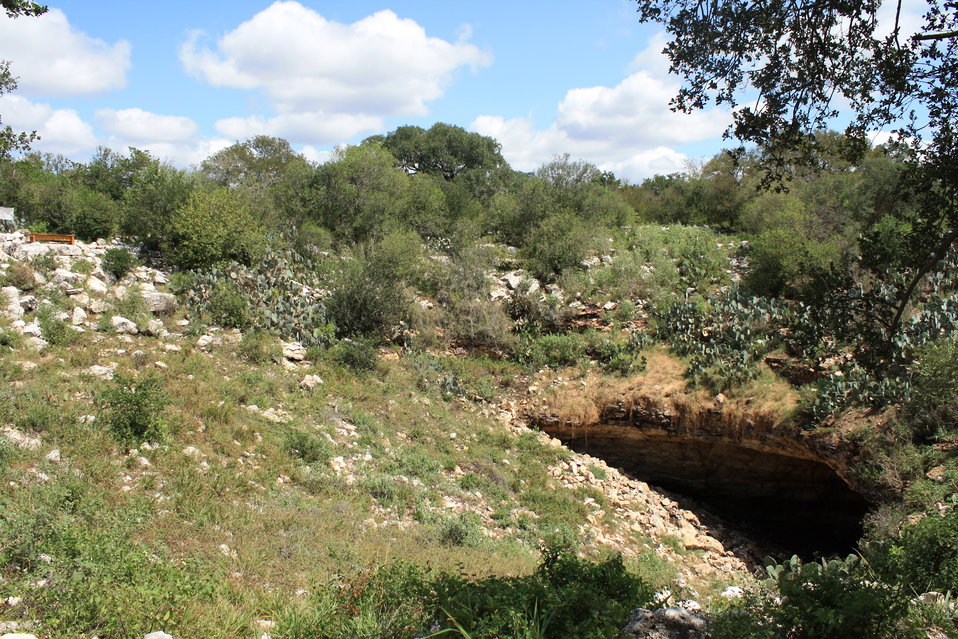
Entrance to Bracken Bat Cave